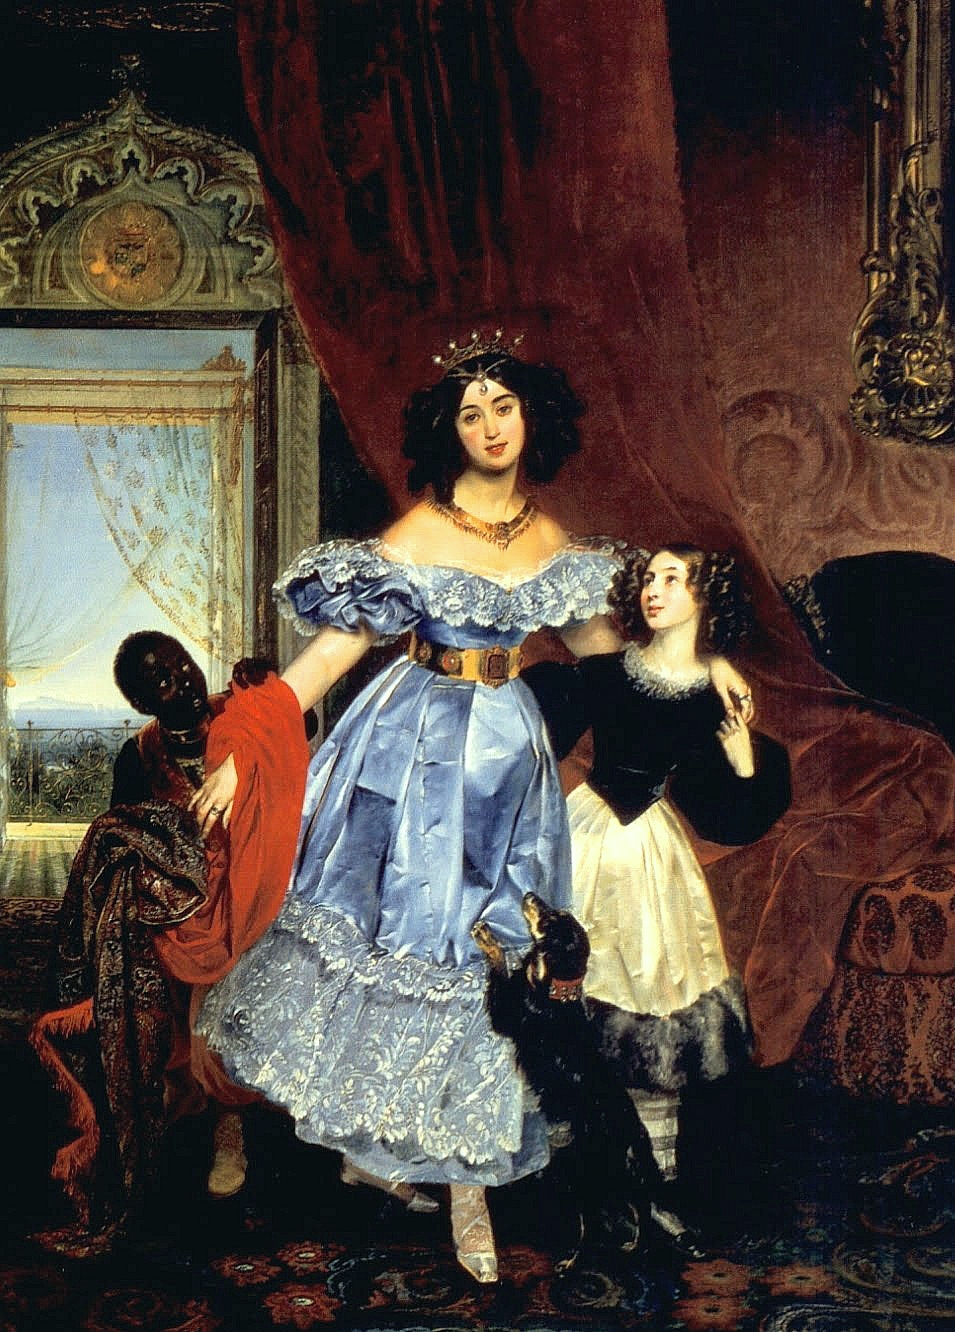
Samoil arap